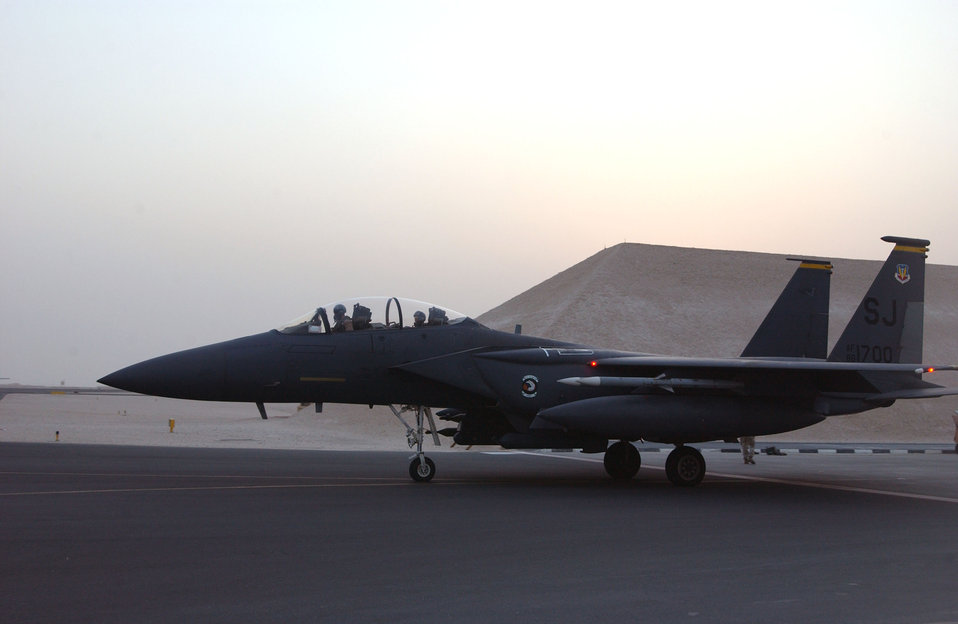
Strike Eagle at dusk

An F-15E Strike Eagle taxis from its protective bunker for a night combat mission over Iraq. The aircraft and crew are deployed to the 335th Expeditionary Fighter Squadron in Southwest Asia from Seymour Johnson Air Force Base, N.C.